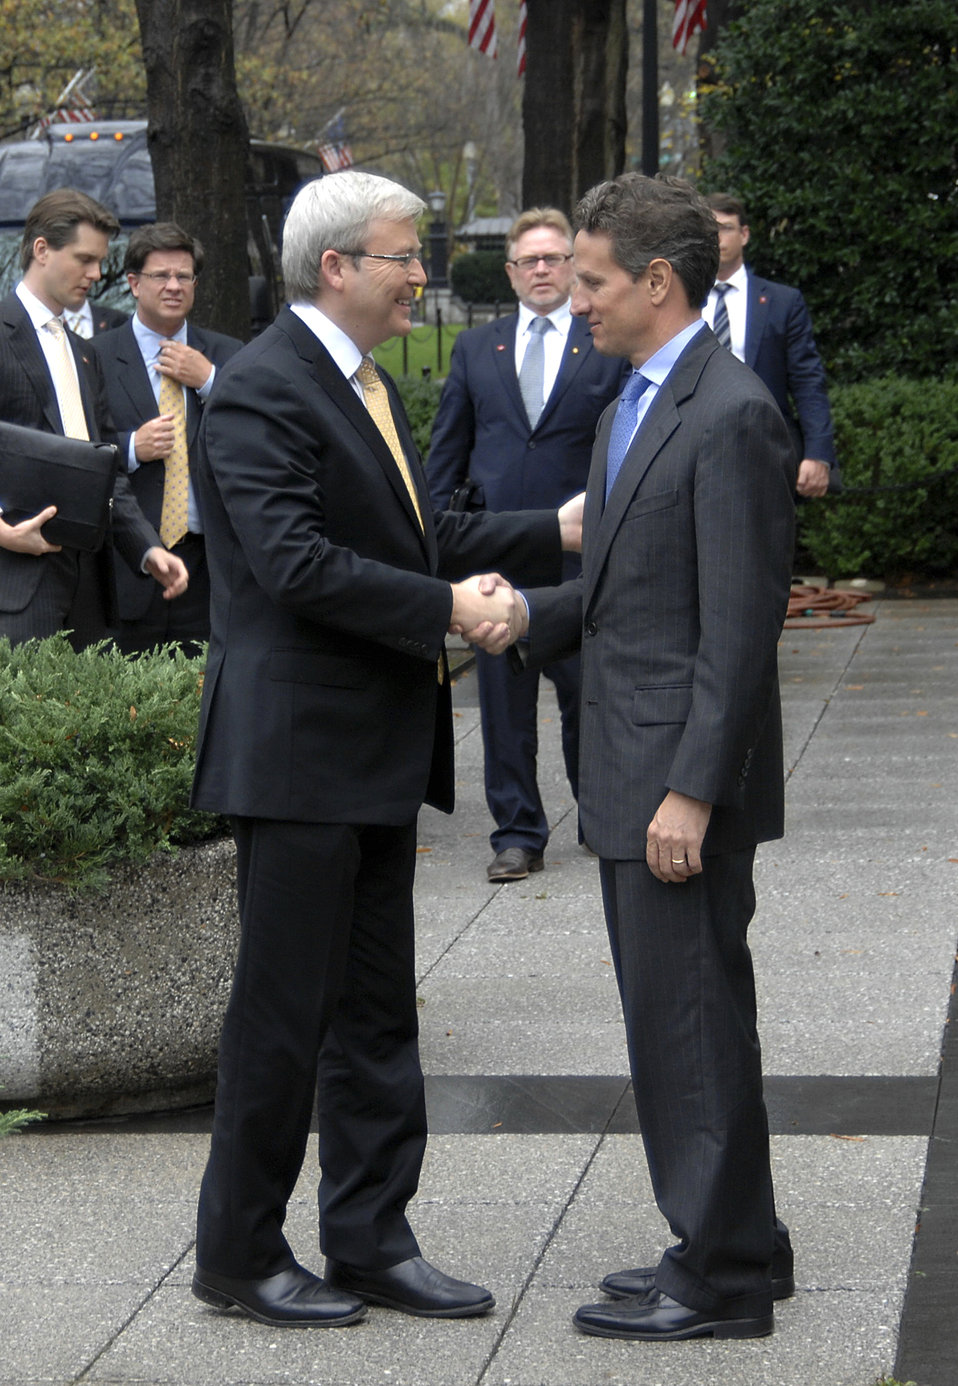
Australian Prime Minister Rudd

On November 30, 2009, Secretary Geithner met with Australian Prime Minister Rudd at Treasury.